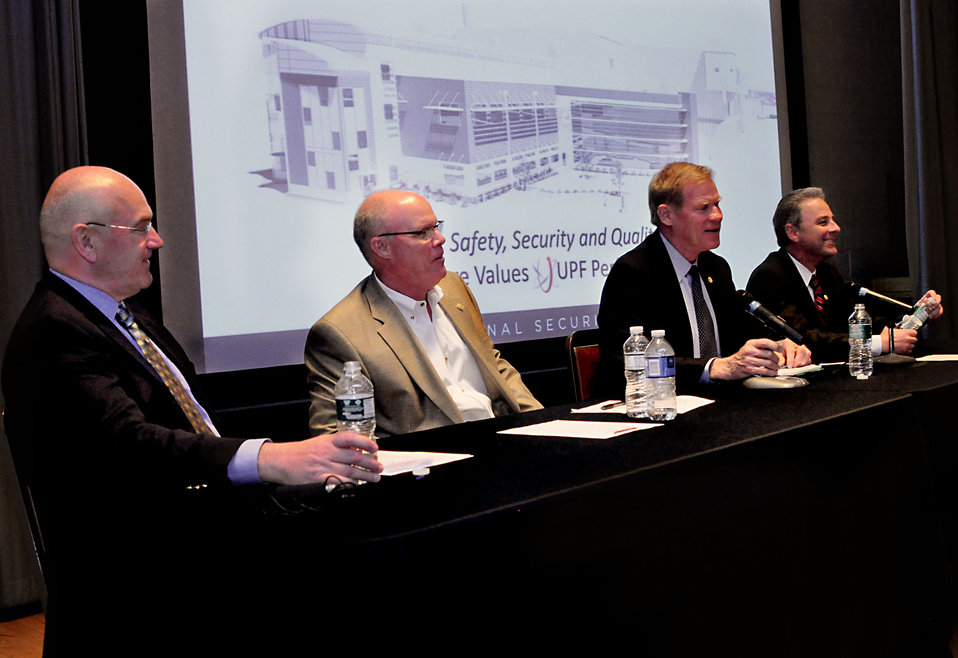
Oak Ridge Business Saftey Partnership Meeting UPF 2014 Oak Ridge

14-042-DOE photo Lynn Freeny 4-2-2014
L to R Jeff Miller ORAU Senior Scientist, Gary Hagan Manager for ES&H, Carl Strock Project Director, and John Eschenberg Federal Project Director Oak Ridge Tennessee